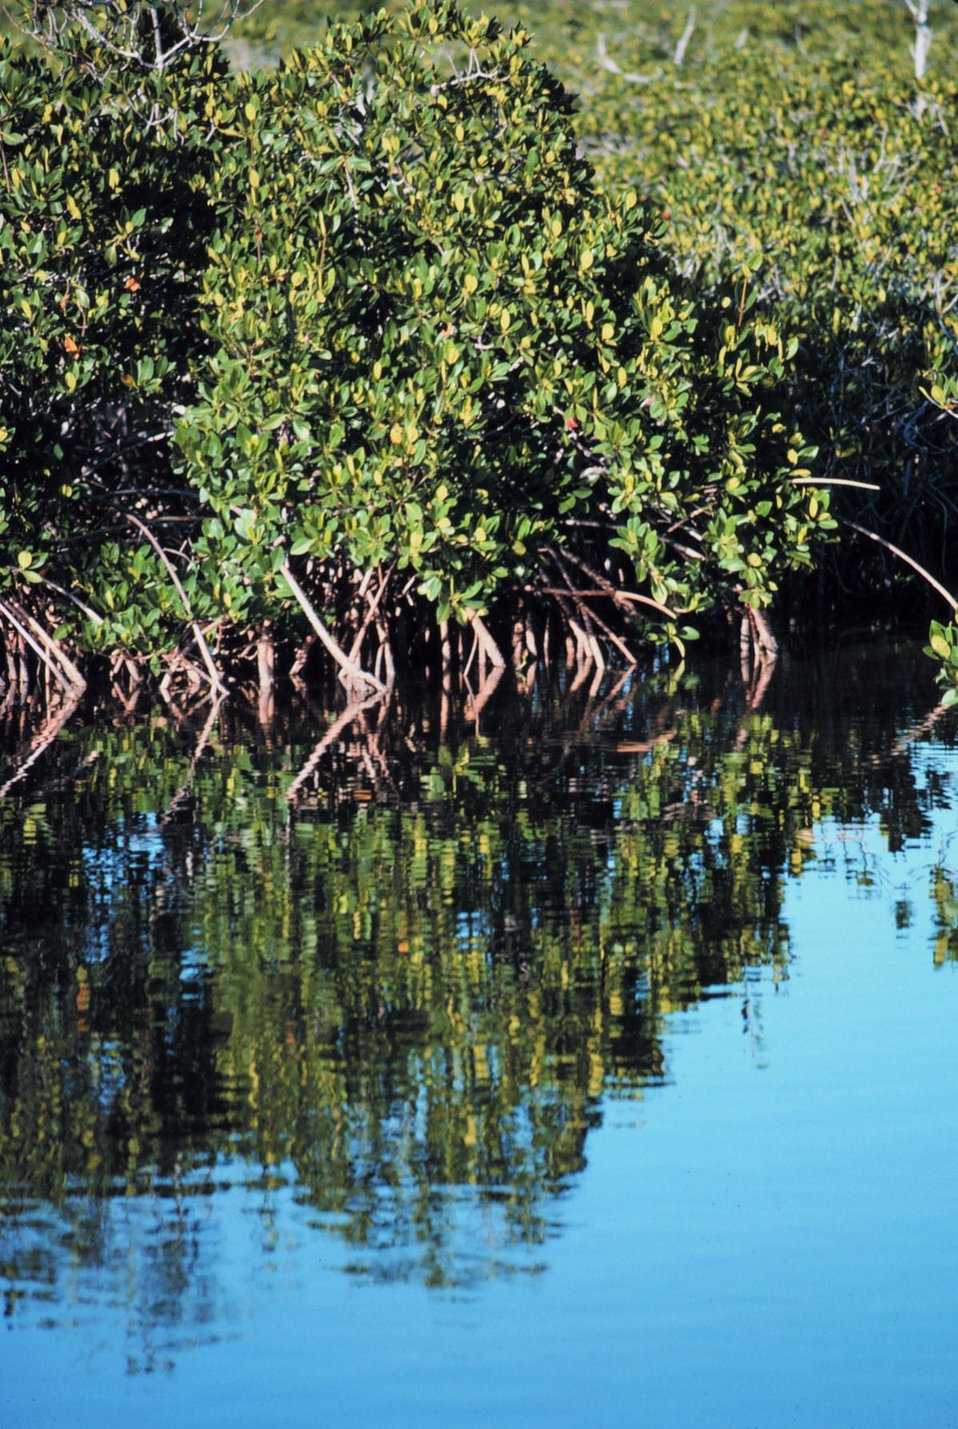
Mangroves in Monroe County